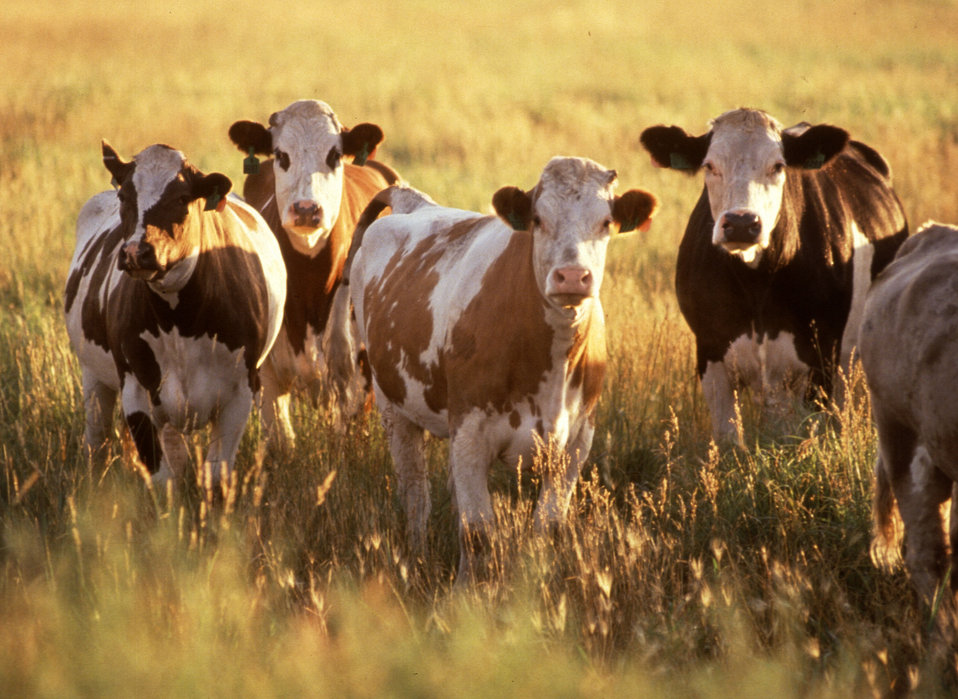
Cattle graze in a field. U.S. Department of Agriculture (USDA) Agricultural Research Service (ARS) has developed a simple blood test that checks the blood urea nitrogen (BUN) levels in cattle. This test can help producers fine-tune their herd's feeding regimen.